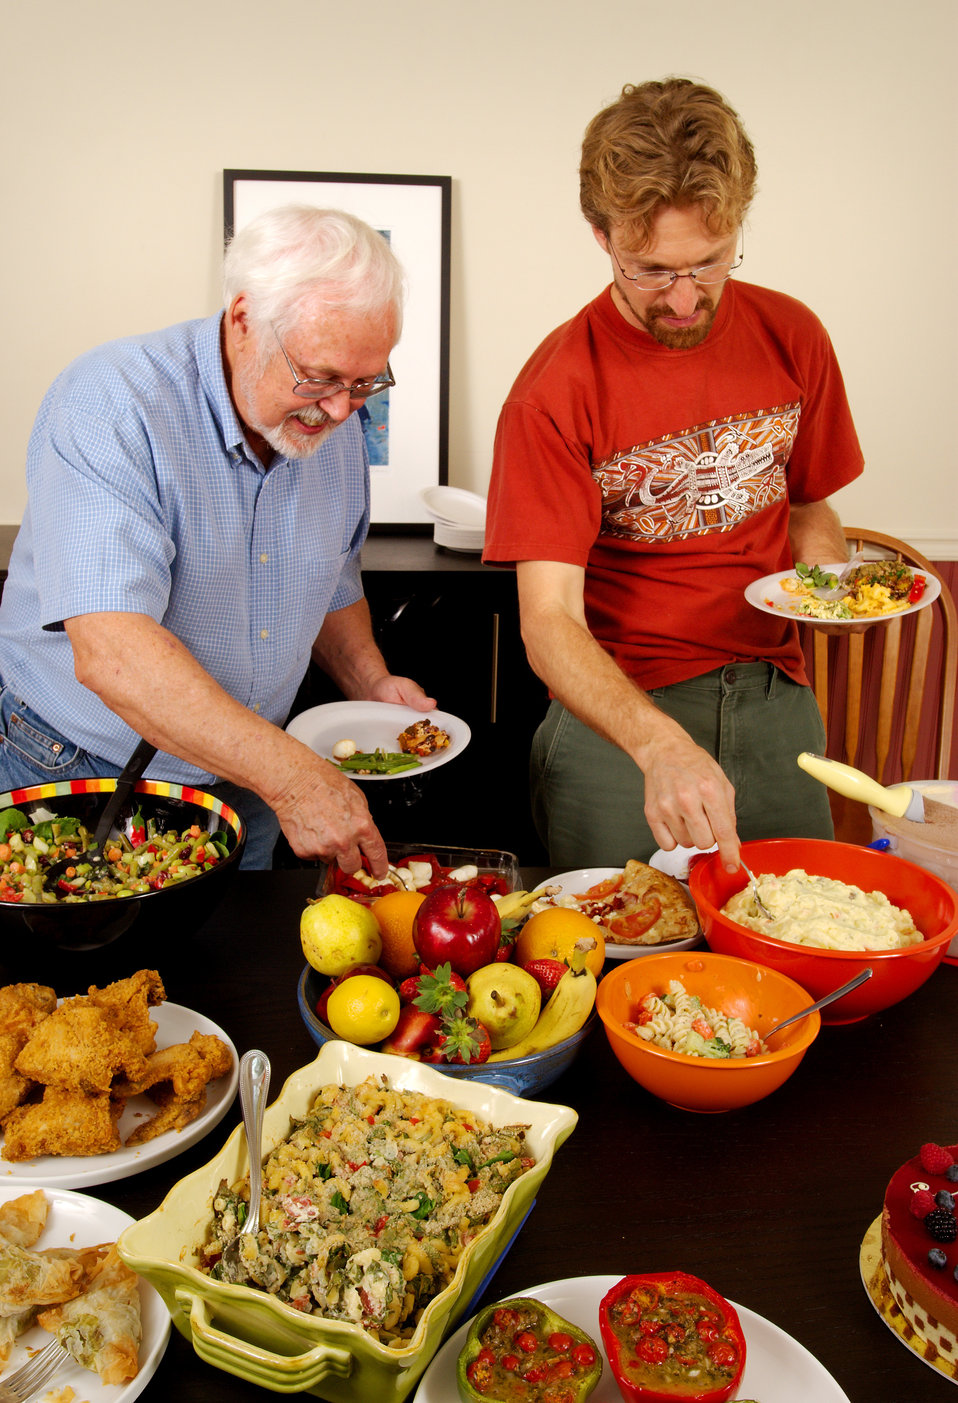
This image depicts two men, serving themselves at a dining table, atop which was plated a large quantity of foods representing a number of different food groups: grains, fruits, vegetables, milk products, meats/poultry/fish, and nuts/seeds/legumes.